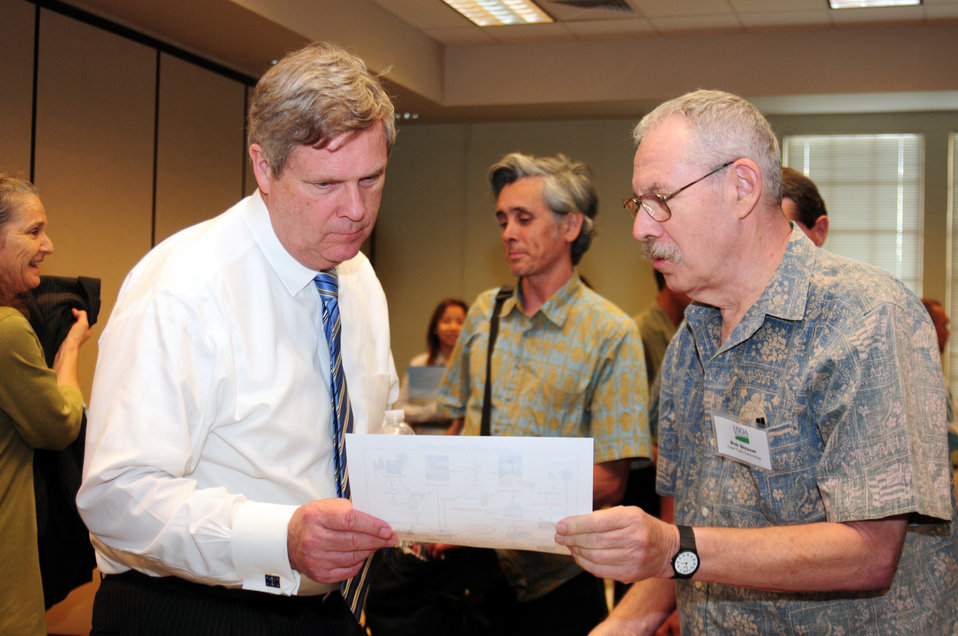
Agriculture Secretary Tom Vilsack speaks with Bob Shleser of Clear Fuels Technology at the conclusion of a stakeholder meeting held at the State of Hawaii, Department of Agriculture Plant Quarantine Building in Honolulu, Hawaii, on Tuesday, January 10, 2012, USDA Photo By Rebecca J. Moat.